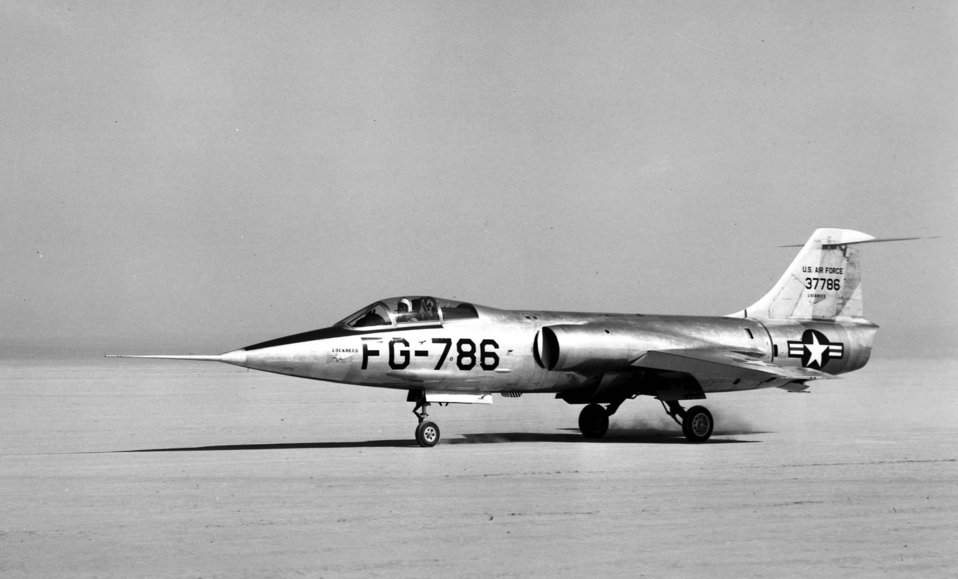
XF-104, prototype for the F-104 Starfighter

The XF-104 from Lockheed taxis on Rogers Dry Lake, Edwards Air Force Base, Calif. in the 1950s. The XF-104 is distinguished by the lack of inlet shock cones and the short fuselage.